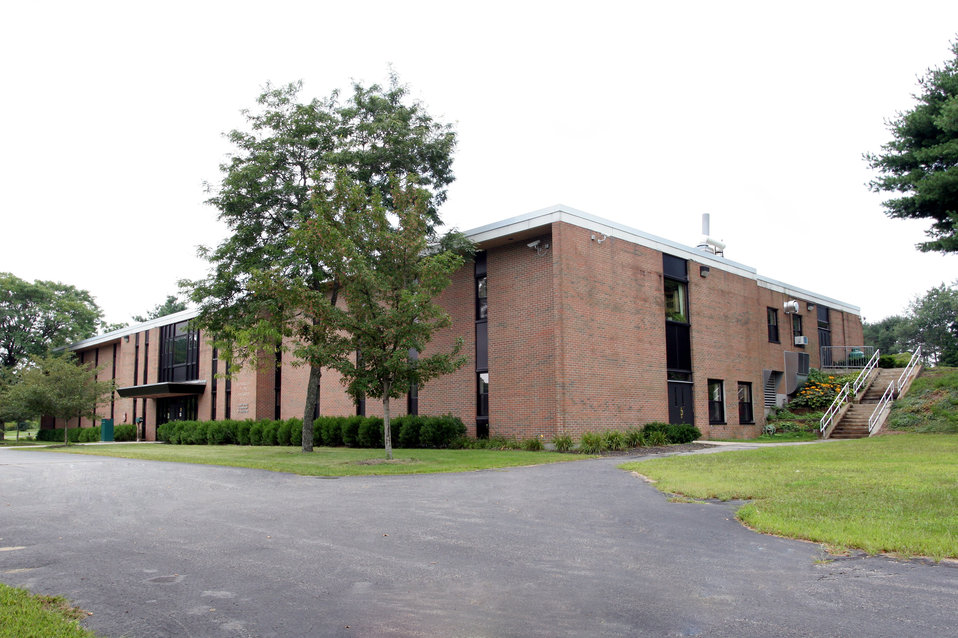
This is an image of the U.S. Department of Agriculture (USDA) U.S. Forest Service research facility in Durham, NH.